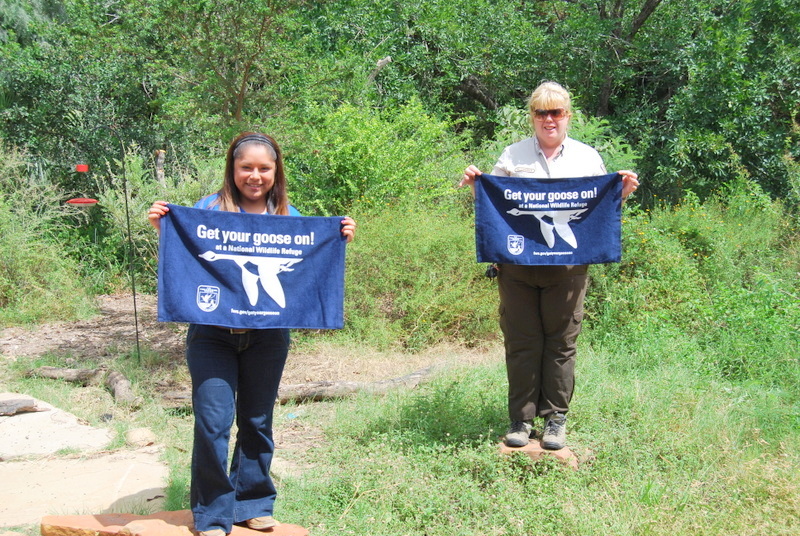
Get Your Goose On!

Butterfly garden at Santa Ana National Wildlife Refuge in southern Texas.